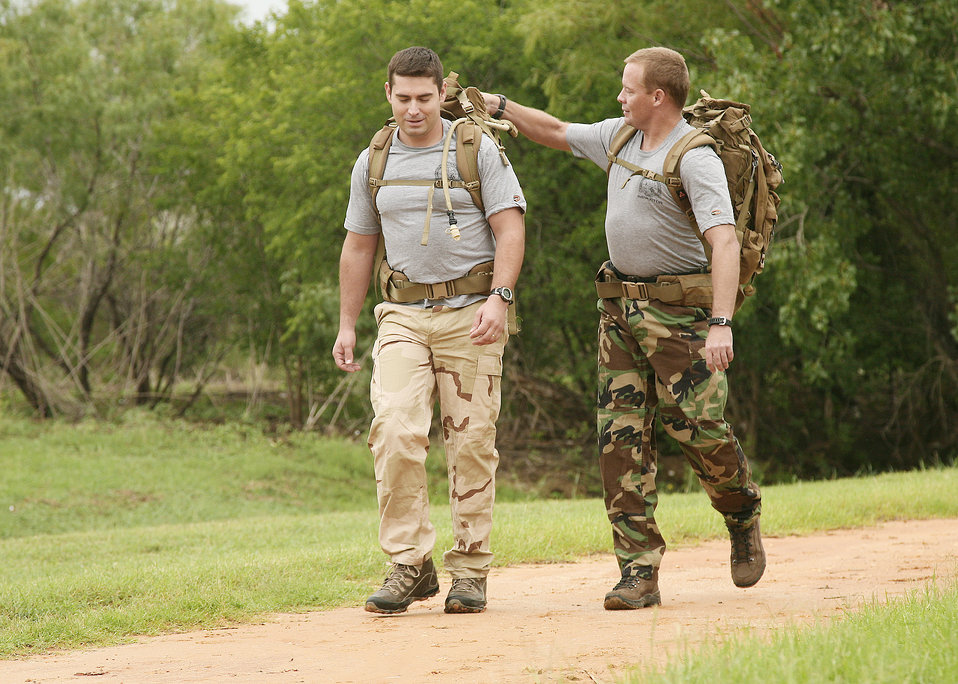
Special tactics Airmen honor fallen teammates

Master Sgt. Kenneth Huhman (right) helps 1st Lt. Sam Schindler with his ruck sack at the Lackland Training Annex, Texas, Sept. 24, 2009. On Oct. 6, 12 Airmen left the Lackland Training Annex at 5 a.m. and began the ruck march to Hurlburt Field, Fla., to honor 12 fallen special tactics Airmen killed in Iraq and Afghanistan.